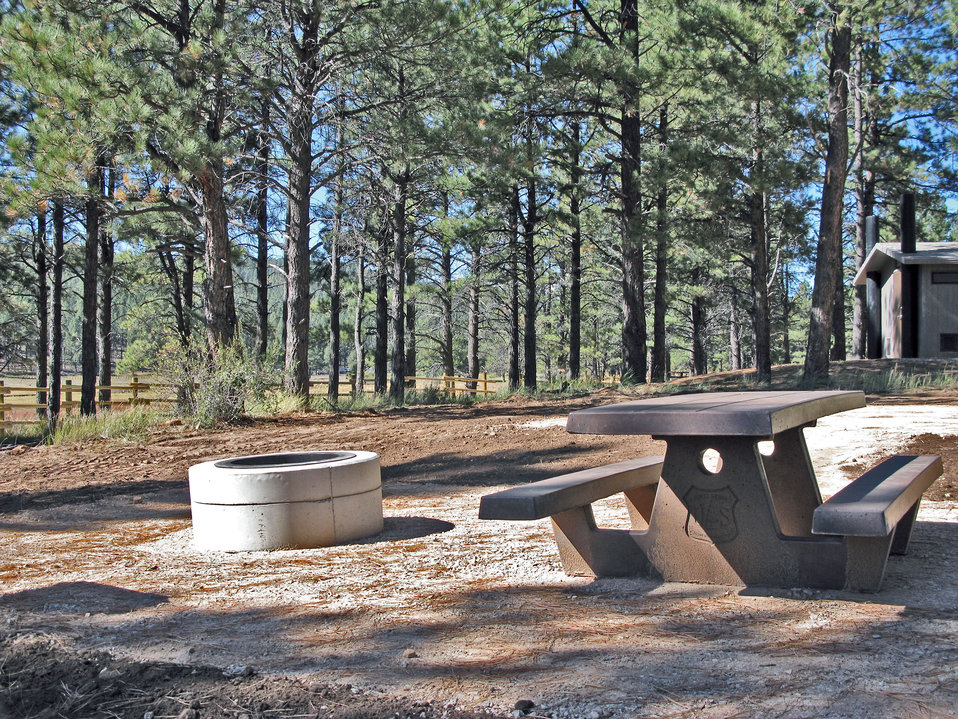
campingarea

One of the new camping areas in the Buckeye Recreation Area.